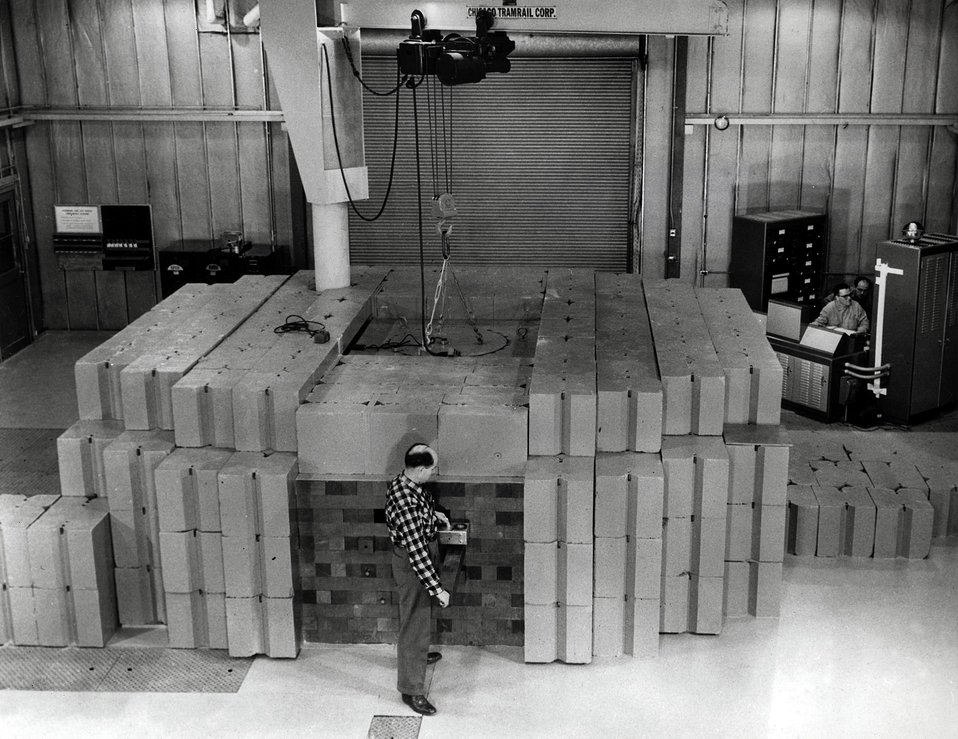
Andrew Selep checking the activity level of a stringer withdraw from the thermal column of the Argonaut reactor at Argonne.
c.1961